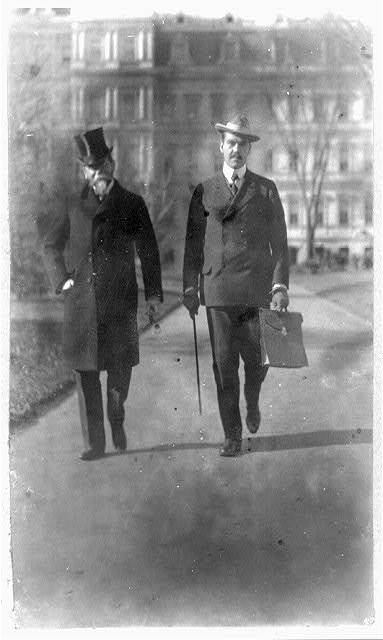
John Hay, U.S. Secretary of State, left, walking with his son.

John Hay, pictured left, U.S. Secretary of State, 30 September 1898 to 1 July 1905.

From lcweb2.loc.gov/cgi-bin/query/h?pp/PPALL:@field(NUMBER @1(...